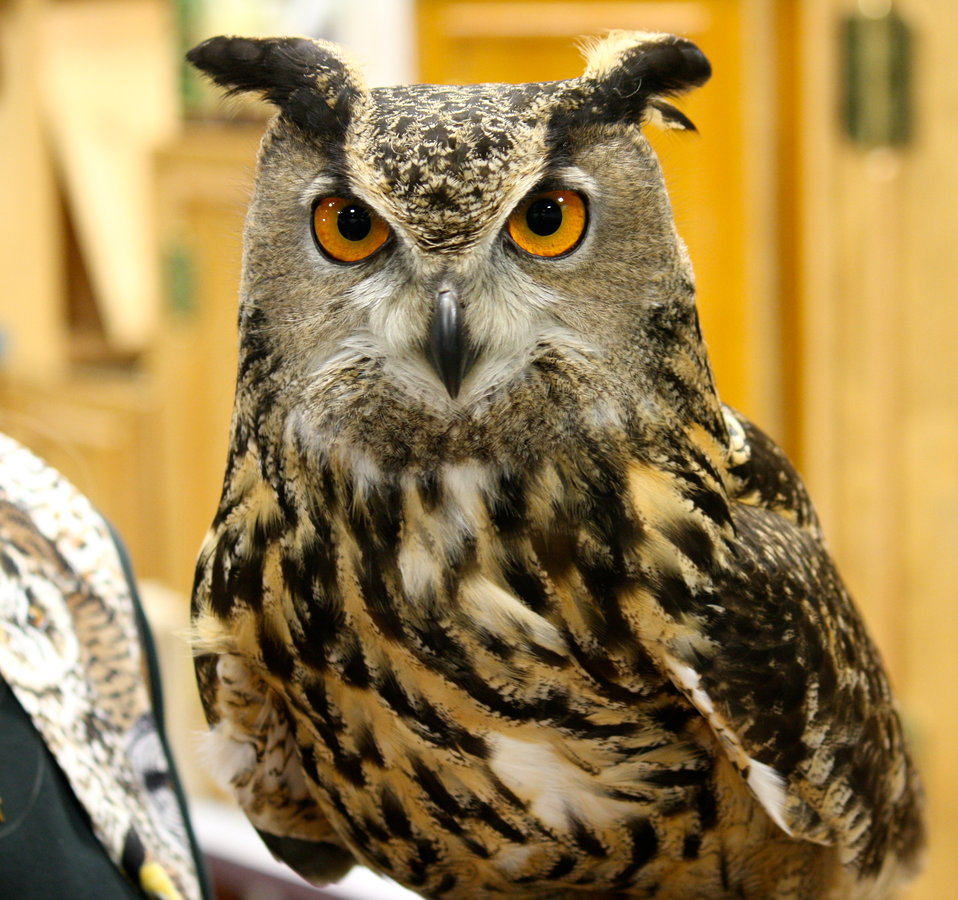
Great horned owl presented by Eyes On Owls at the annual fishing derby held at the USFWS Northeast Regional Office.